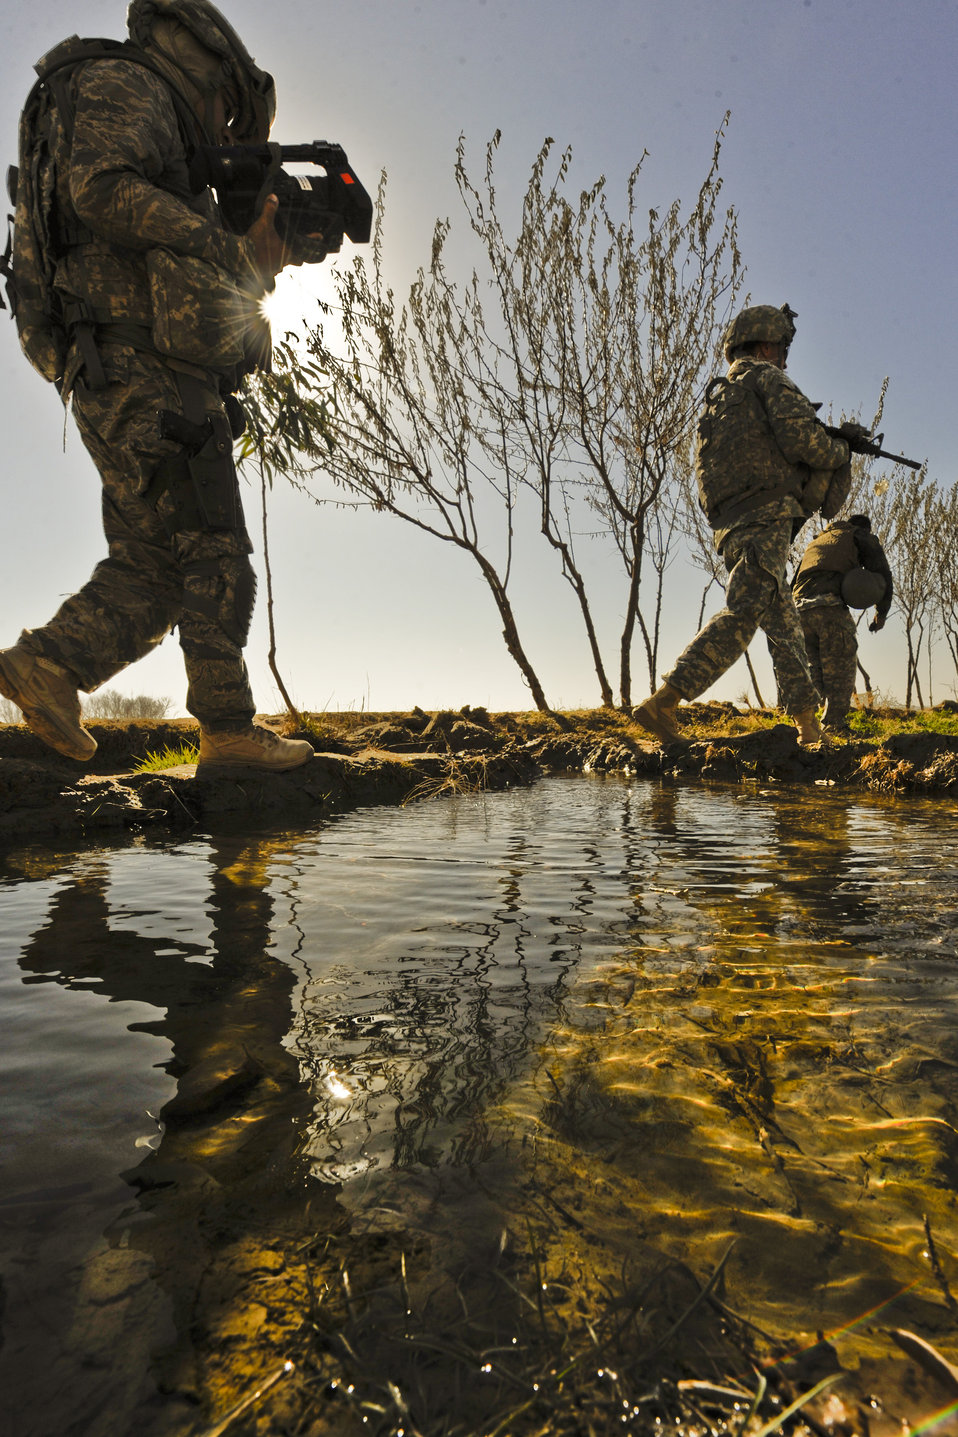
Behind the lens: Combat camera in Afghanistan

Tech. Sgt. Rodolfo Castro documents Soldiers with the Headquarters and Headquarters Company of 4th Battalion, 23th Infantry Regiment, conducting a foot patrol Jan. 15, 2010, in Helmand province, Afghanistan.